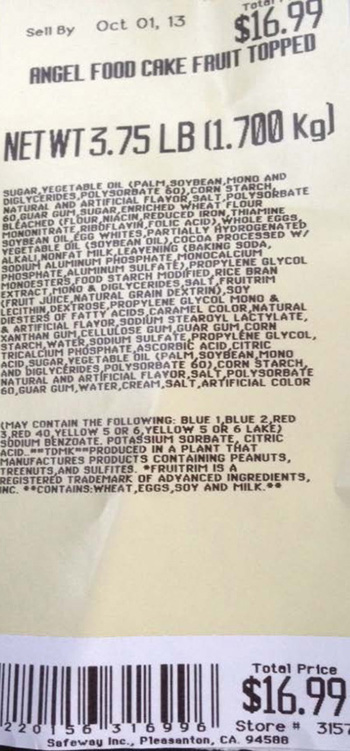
RECALLED – Angel Food Cakes

September 26, 2013 – Product Recall – Safeway Recalls Several Varieties of Angel Food Cake Due to Undeclared Soy and Milk Allergens.